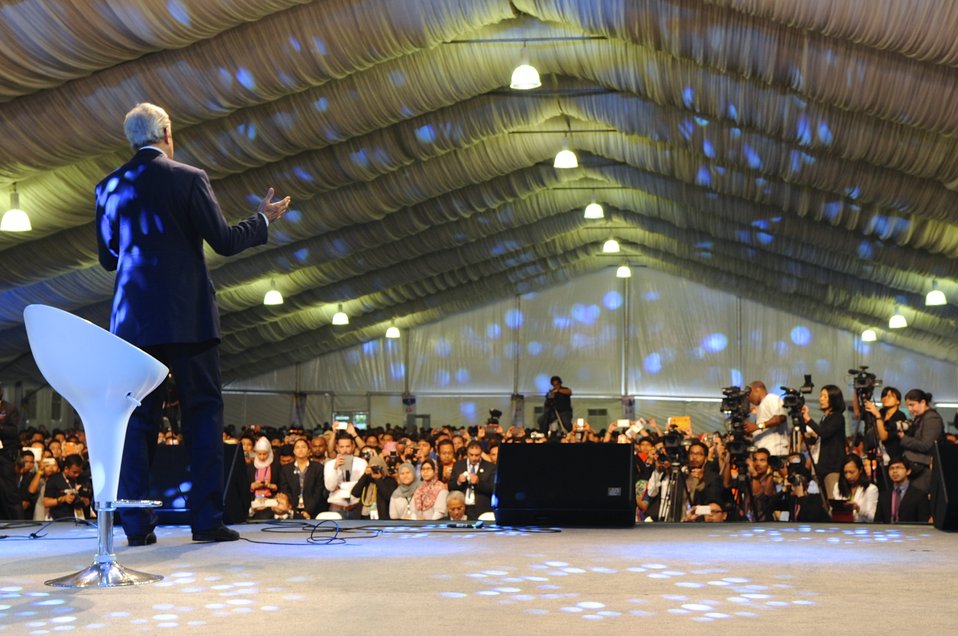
Secretary Kerry Addresses 1MET Kick-Off

U.S. Secretary of State John Kerry address over 4,700 young people gathered for the 1MET Kick-Off, held as part of the Global Entrepreneurship Summit in Kuala Lumpur on October 11, 2013.